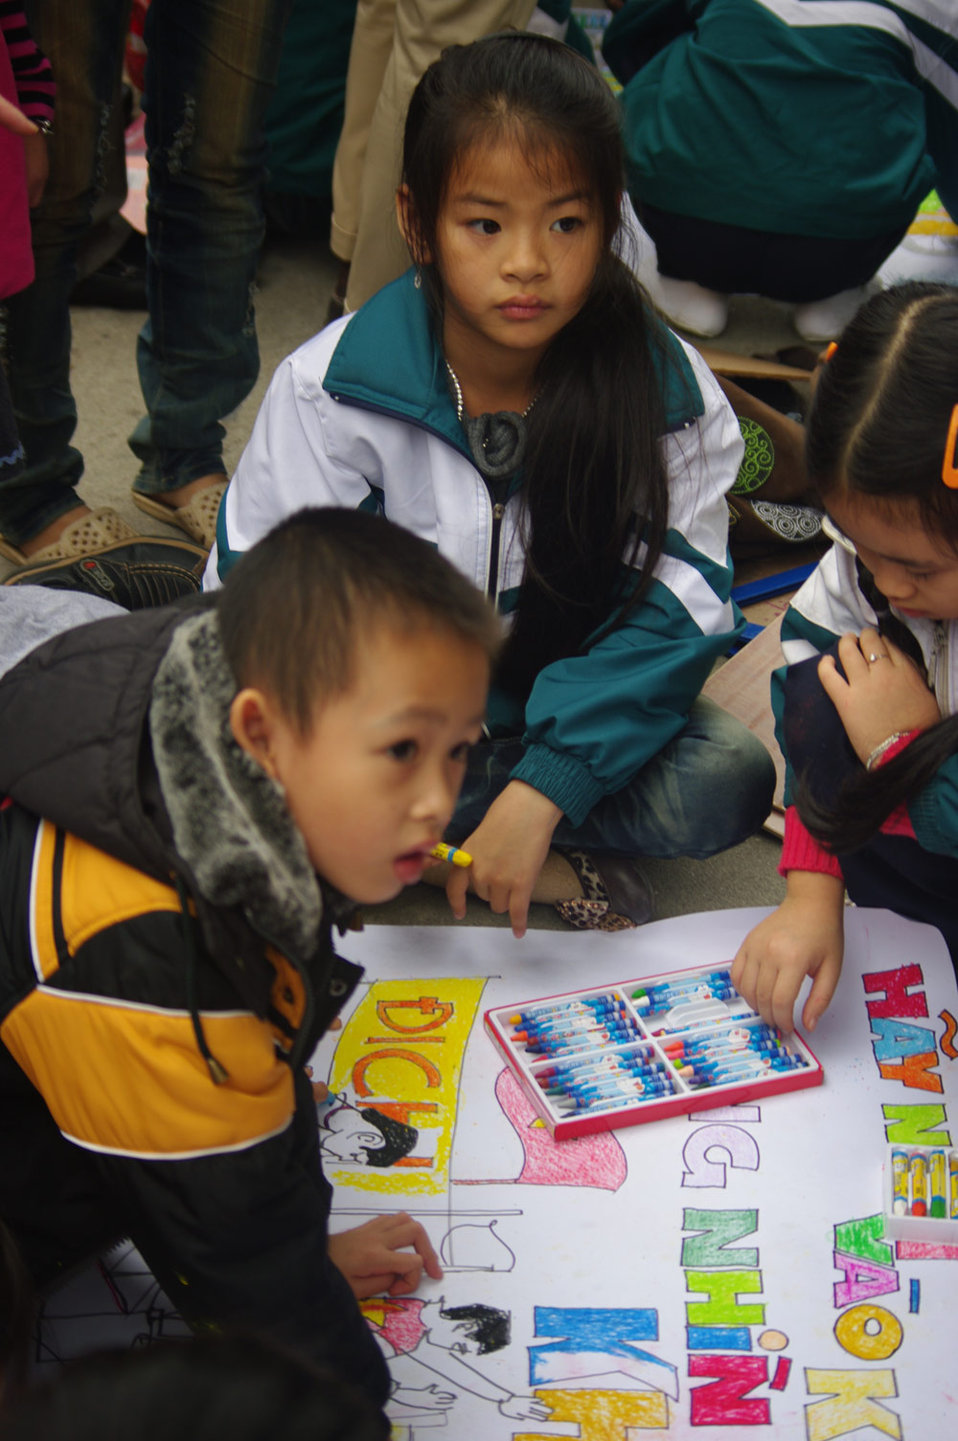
International Day of Persons with Disabilities 2010